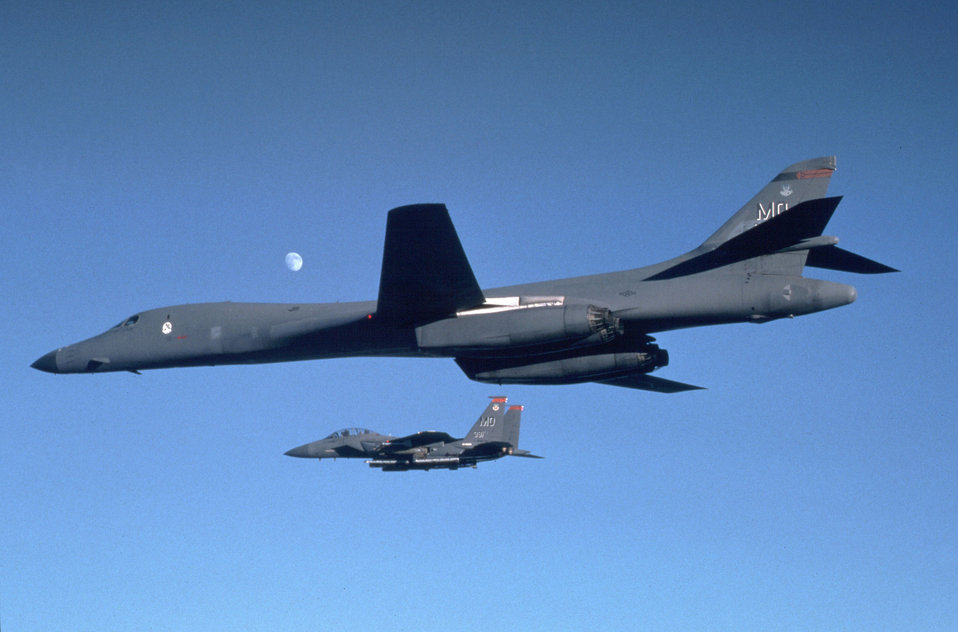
Partners

FILE PHOTO -- A B-1B Lancer and an F-15 Eagle fly in formation. The B-1B is a long-range strategic bomber with a top speed more than 900 mph. It is capable of flying intercontinental missions without refueling. The F-15 Eagle is the Air Force's premier air-to-air fighter. Both will be on display at the Istres Air Show, Istres, France, May 20.